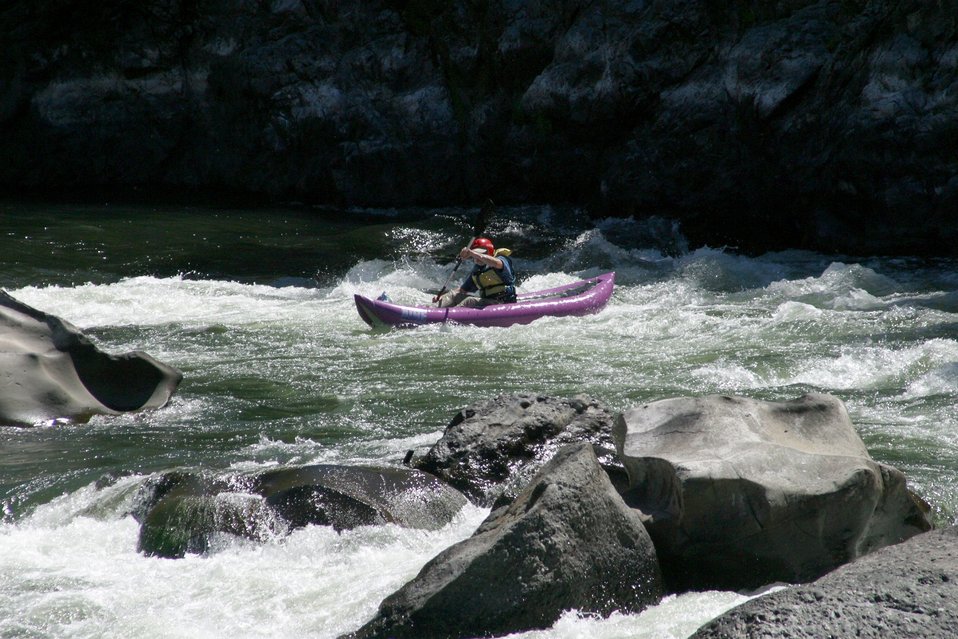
Boaters negotiate Blossom Rapids.